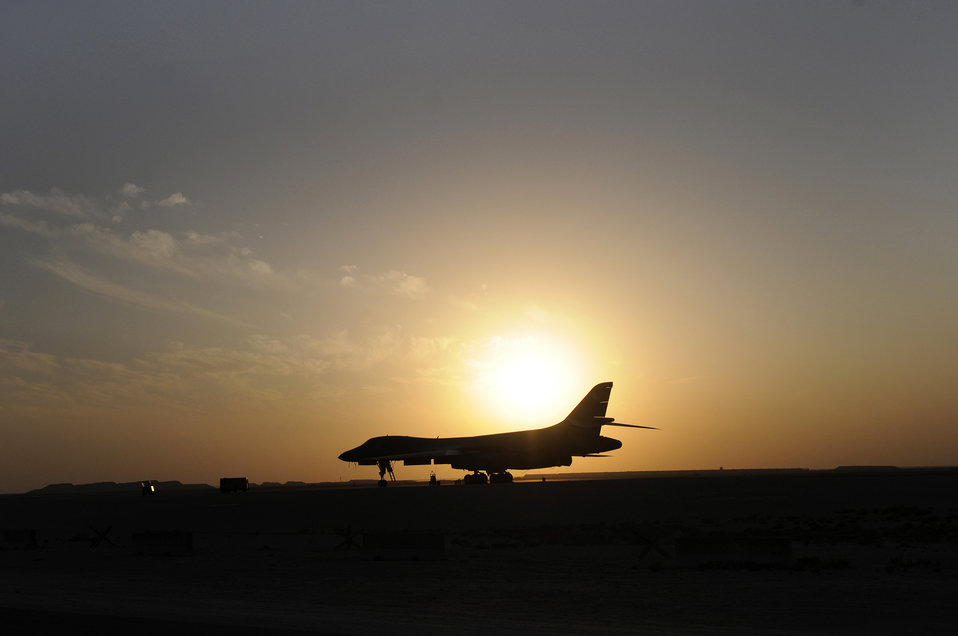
July 27 airpower summary: B-1B provides overwatch

The setting sun silhouettes a B-1B Lancer in Southwest Asia. The B-1B has the capability to carry guided and unguided weapons and deliver massive quantities of precision and non-precision weapons against specific targets.